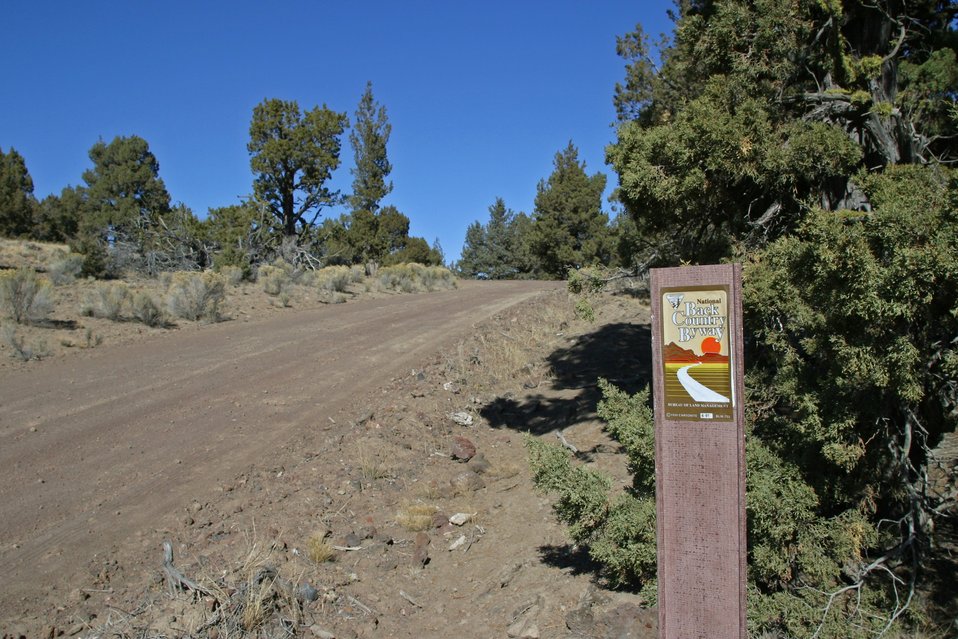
BLM's Christmas Valley Back Country Byway in Central Oregon.